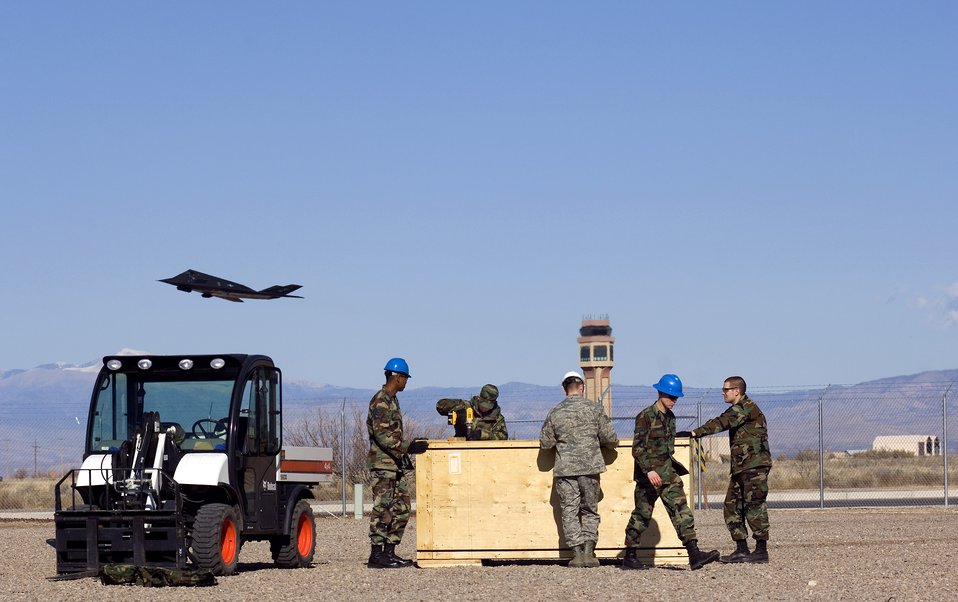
Providing shelter is a BEAR

Airmen from the 49th Material Maintenance Group work to build a small shelter system during a Jan. 16 exercise at Holloman Air Force Base, N.M. Members of the 49th MMG can build a Basic Expeditionary Airfield Resource, or BEAR, in austere conditions anywhere in the world. Airmen of the 49th MMG maintain a constant state of readiness and can be tasked to support any Department of Defense or Federal Emergency Management Agency humanitarian operations along with primary duties of supporting combat operations.